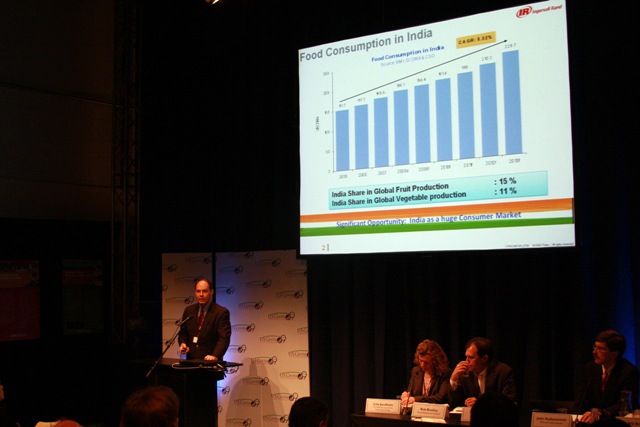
'Development Agenda for Clean Energy and Transfer of Technologies' Presentation at COP-15

Jeff Moe of Ingersoll Rand participates in a panel presentation on the 'Development Agenda for Clean Energy and Transfer of Technologies' at the U.S. Center during COP15 (Conference of the Parties to the UN Framework Convention on Climate Change) in Copenhagen, Denmark December 10, 2009.